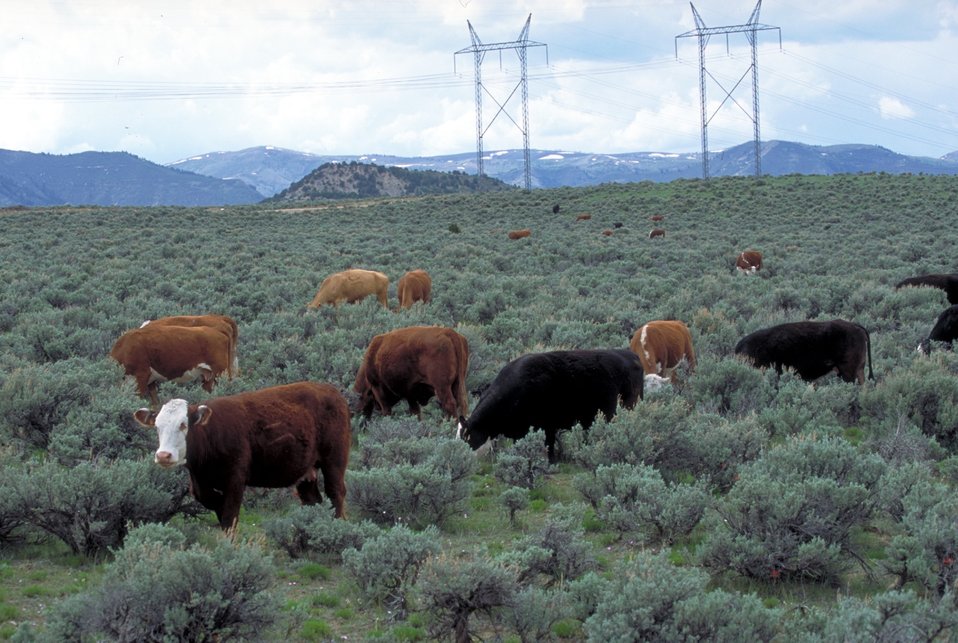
Livestock grazing on BLM lands near Price, Utah.